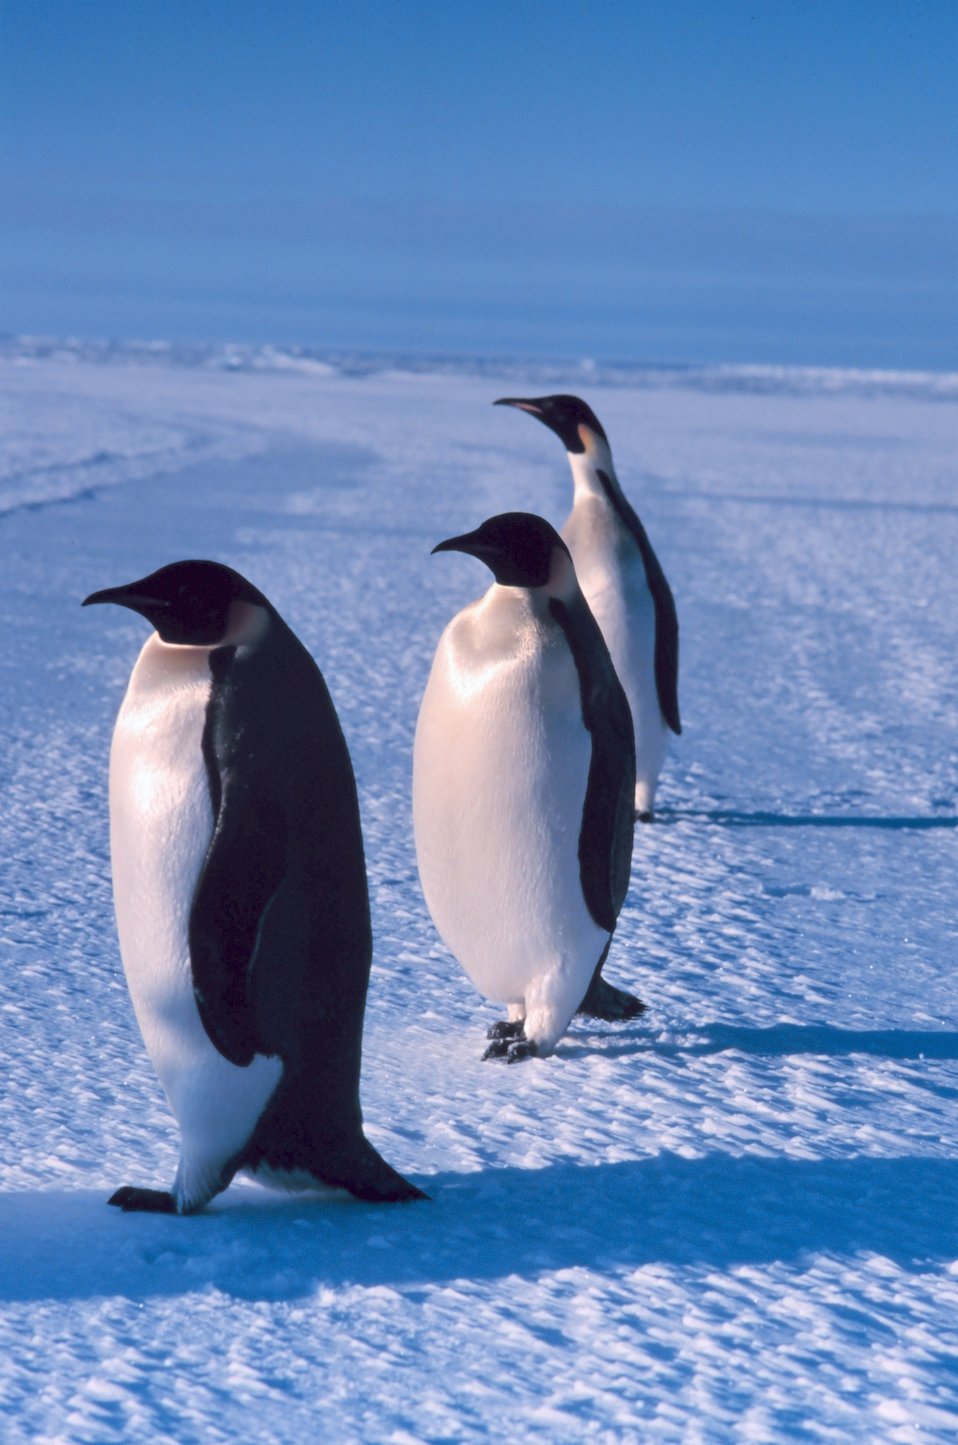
Emperor penguins in the Southwest Ross Sea.